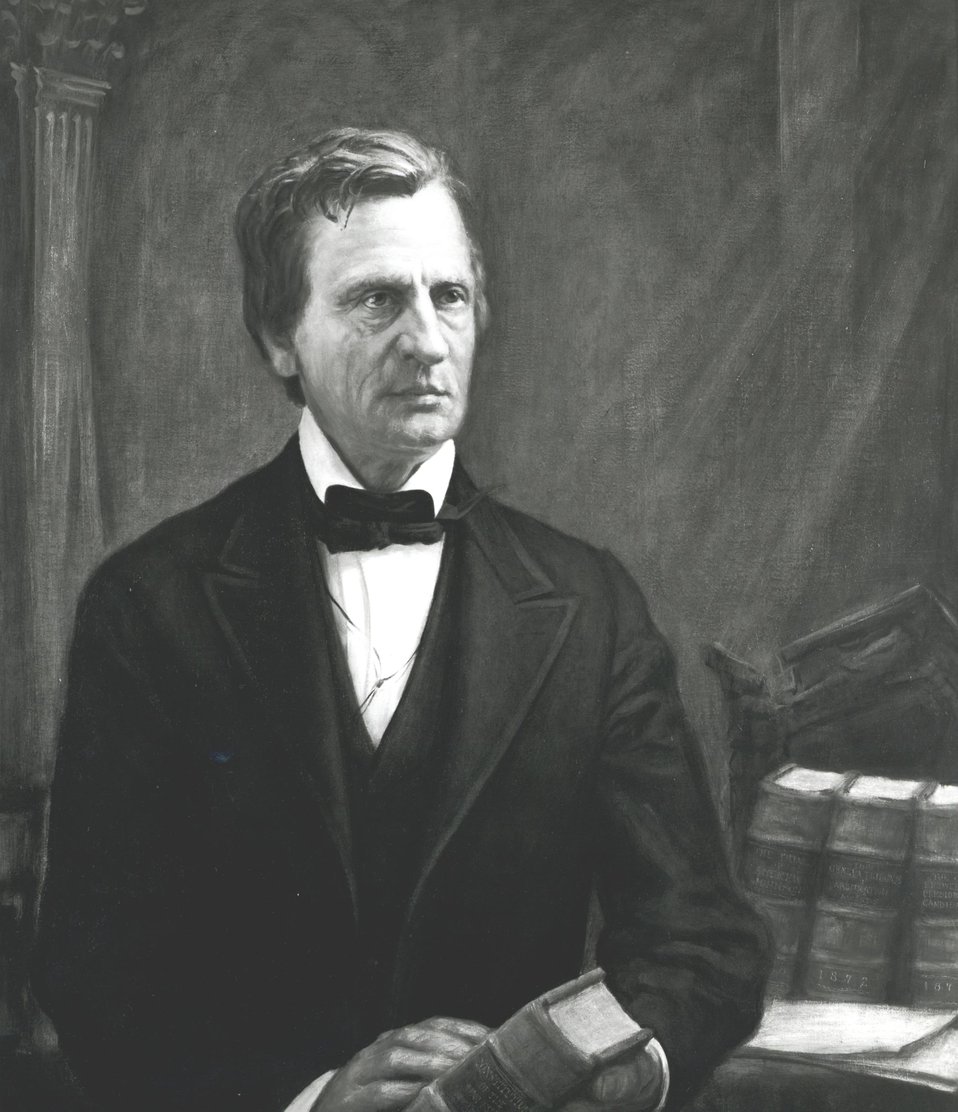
William M. Evarts, U.S. Secretary of State, March 12, 1877 to March 7, 1881